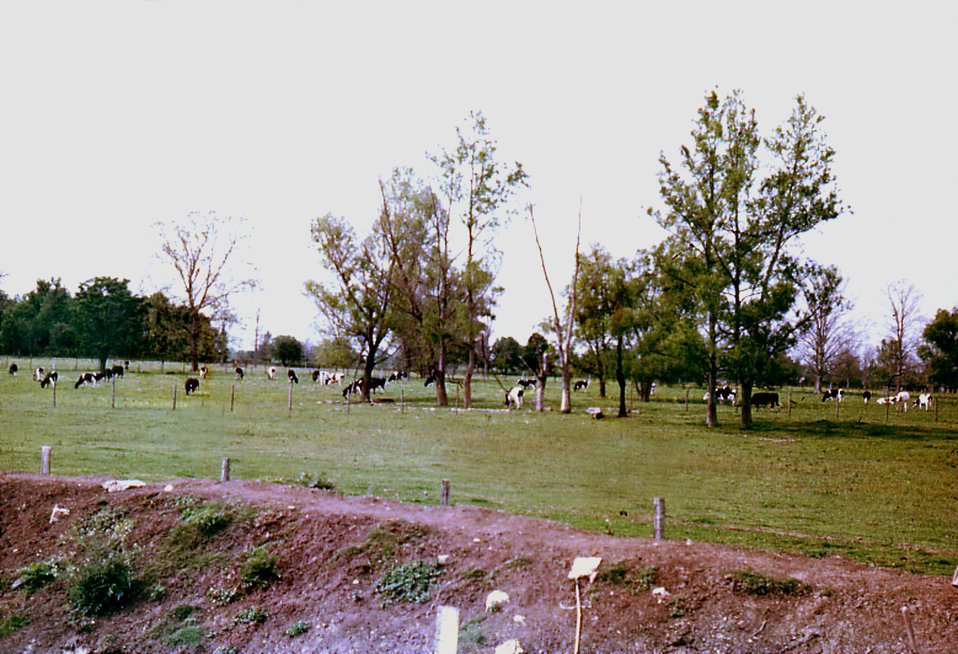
This historic image depicted a cattle pasture on the grounds of the Carville Leprosarium. The hospital hosted its own dairy where a large number of cows were raised each year. The hospital was a self-contained compound with its own power plant, storehouse, patient treatment centers, which included a dental office, food-processing facilities, i.e., a cafeteria, and its own cemetery.